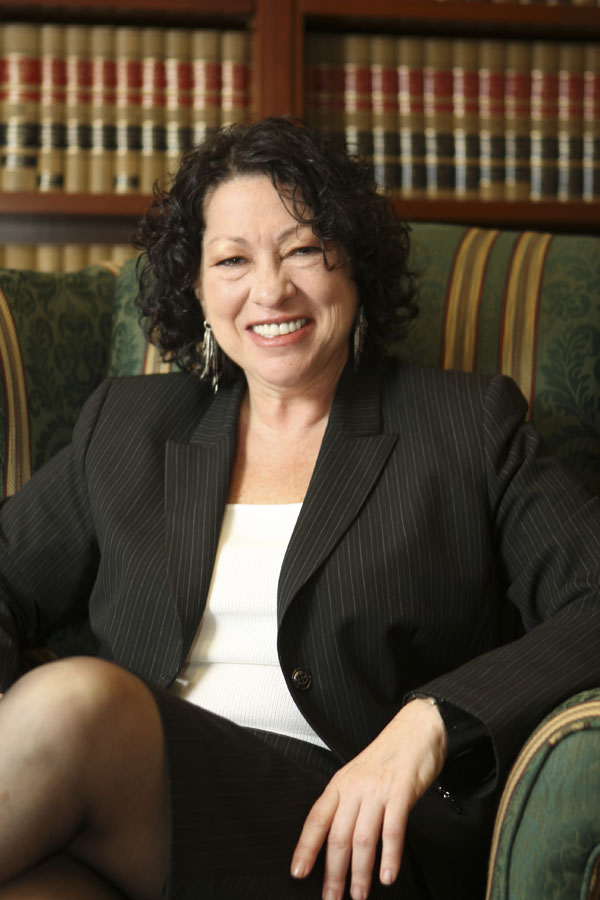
SotomayorPhotos-1009

Judge Sonia Sotomayor in 2009.